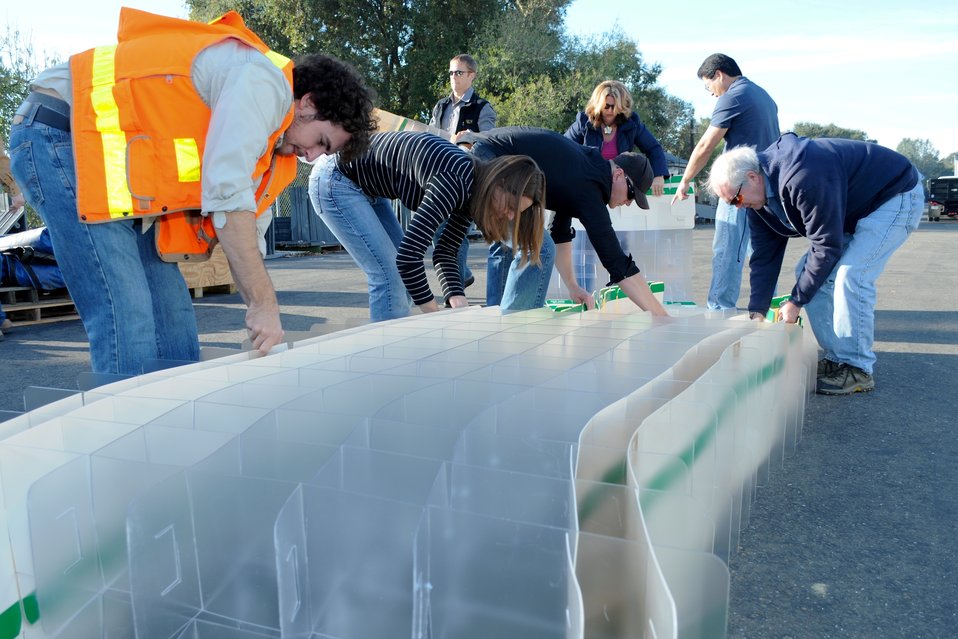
WEST SACRAMENTO, Calif. (Nov. 03, 2010) – Employees from the U.S. Army Corps of Engineers Sacramento District assemble portable flood-water barriers during a product demonstration at a Corps facility here Nov. 3. When filled with sand, the series of interlocking plastic dividers (pictured above) form flood-water barriers. The plastic dividers were one of three new products being tested by Corps employees for future use in emergency and disaster operations.